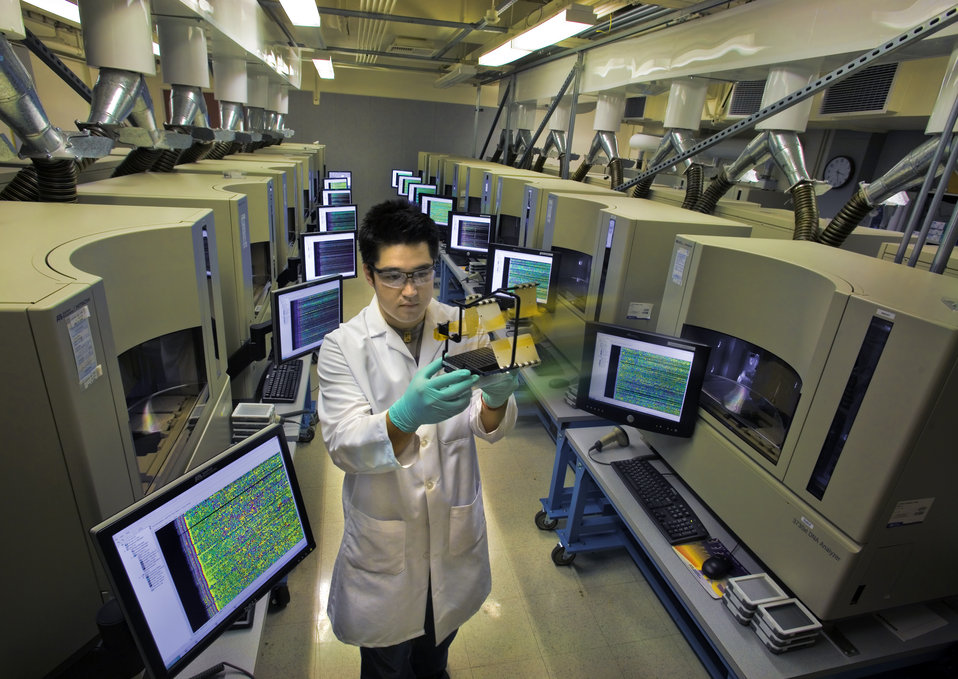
Researcher with 3730XL DNA analyzers at Joint Genome Institute.

Researchers are trying to sequence the three billion paired units that comprise the human genome, the genetic code that is crucial to understanding human development and countless human diseased with genetic roots. The JGI, founded in 1961, is a consortium of scientists from DOE's LBNL, LLNL, and LANL, working on the largest biological undertaking in history, which promises untold opportunities to understand the basic molecular underpinning of life and to improve human health.